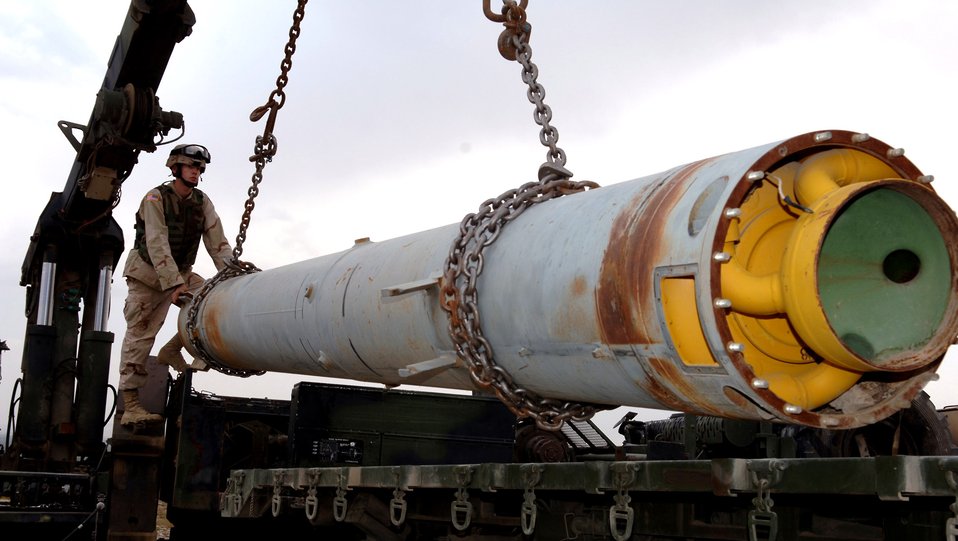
Rocket science

BAGRAM FIELD, Afghanistan -- Army Sgt. Thomas Kio guides the loading of one of three 5,000-pound rockets onto a wrecker truck. Germany-based Soldiers joined members of the 455th Expeditionary Civil Engineer Squadron Explosive Ordnance Disposal Flight here in transporting the rockets from an old Soviet ammunition supply dump near here to a secure site for destruction. The Soldier is from 23rd Ordnance Company at Miesau, Germany.